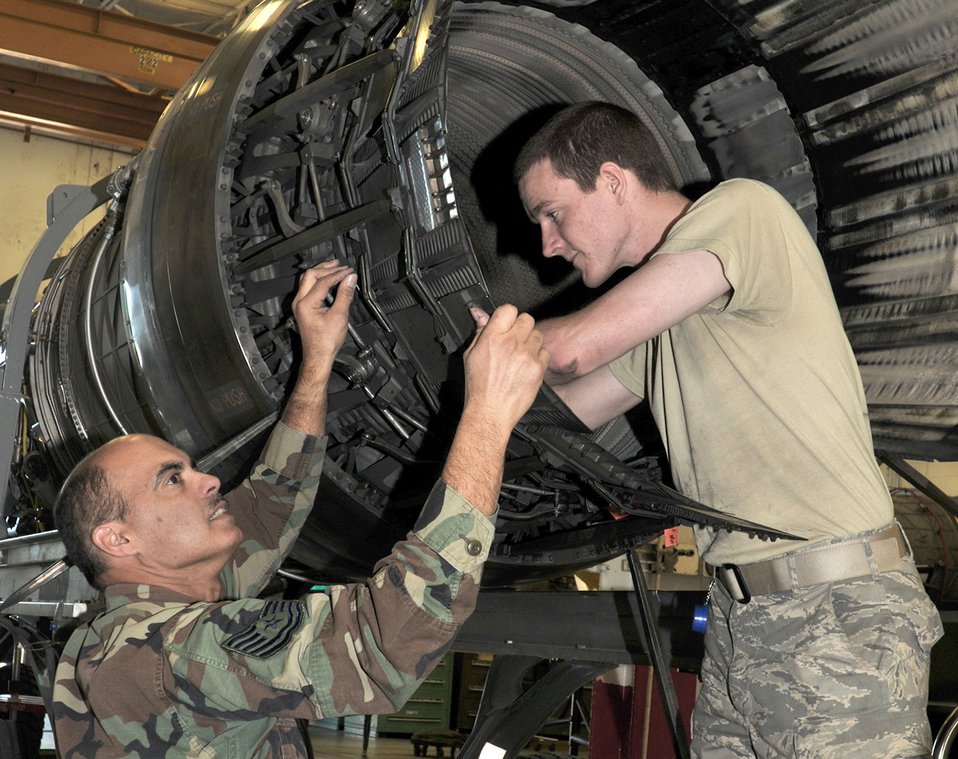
F-15 Eagle engine test run

Tech. Sgt. Edwin Quinones (left) and Airman Mathew Kozdras install parts on F-15 Eagle engine November 10, 2010, at the Florida Air National Guard base in Jacksonville International Airport, Fla. Sergeant Quinones and Airman Kozdras are assigned to the 125th Fighter Wing propulsion shop.